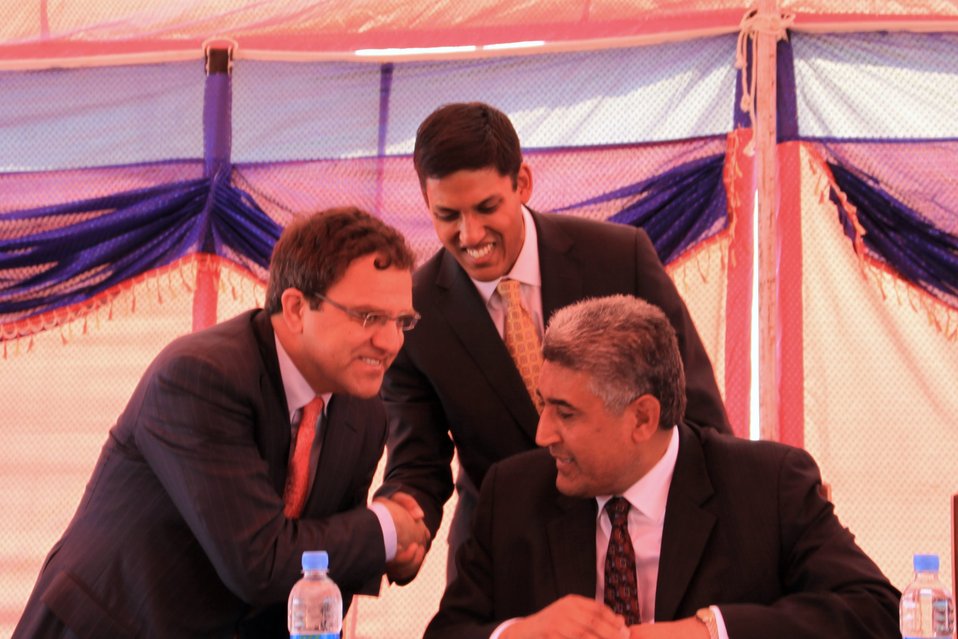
Badam Bagh Farm